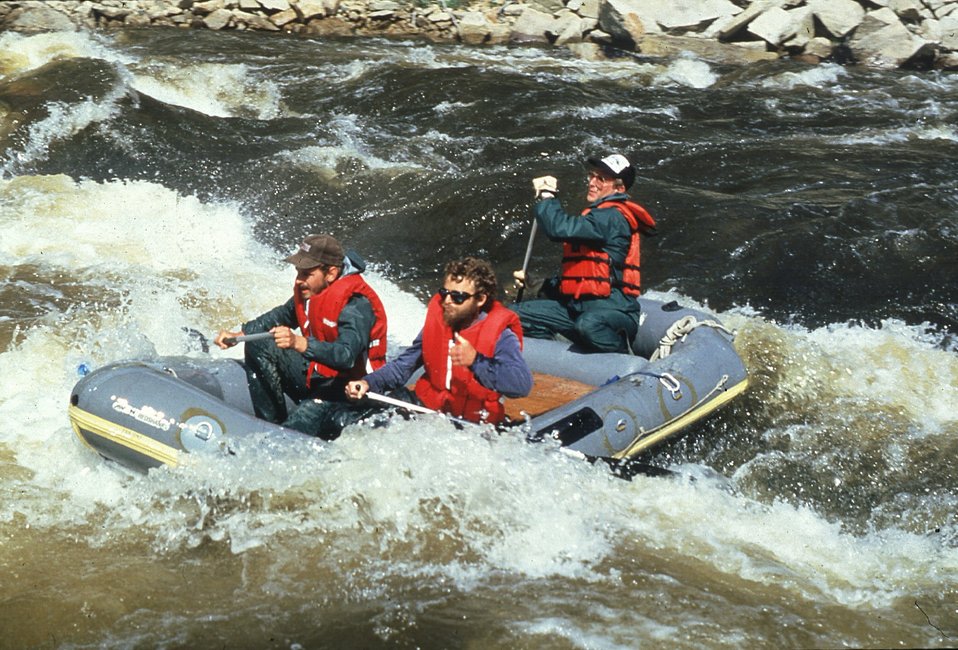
Canyon Rapids, Gulkana NWSR